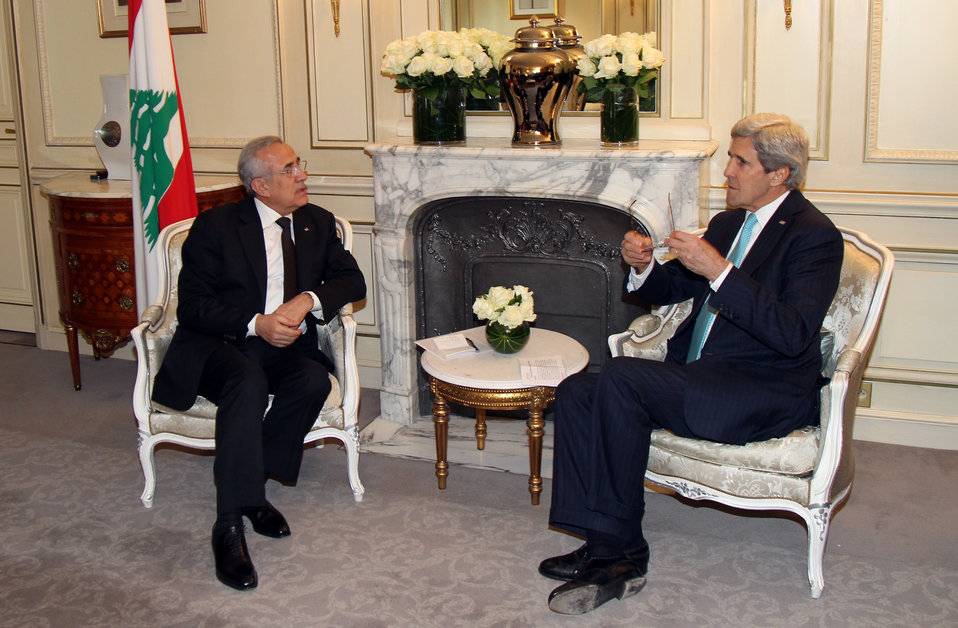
Secretary Kerry Meets With Lebanese President Sleiman

U.S. Secretary of State John Kerry meets with Lebanese President Michel Sleiman in Paris, France, on March 5, 2014.